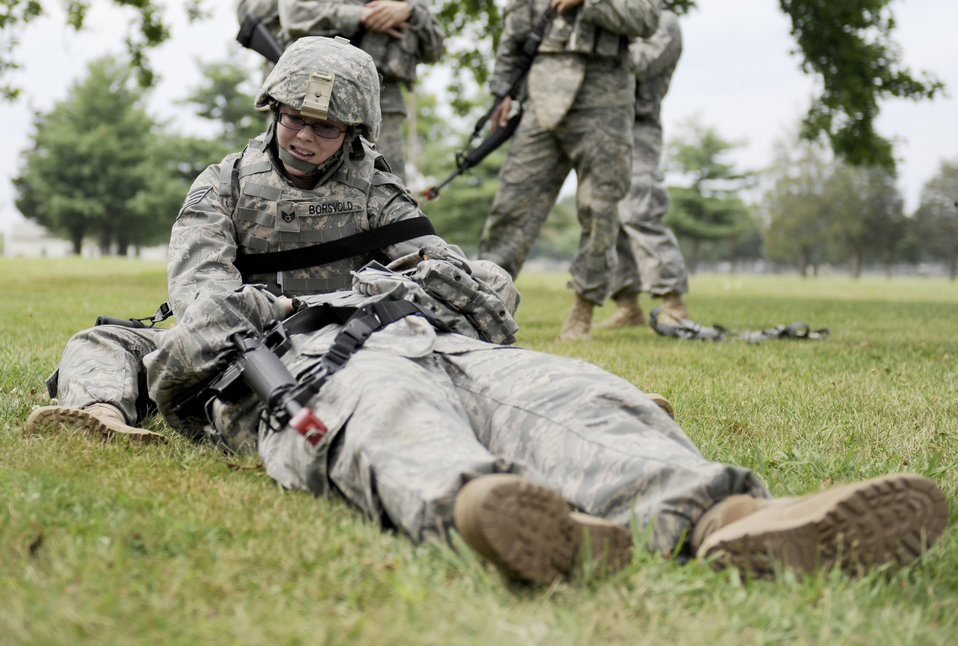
Airmen prepare for deployment

Staff Sgt. LeAnne Borsvold drags a